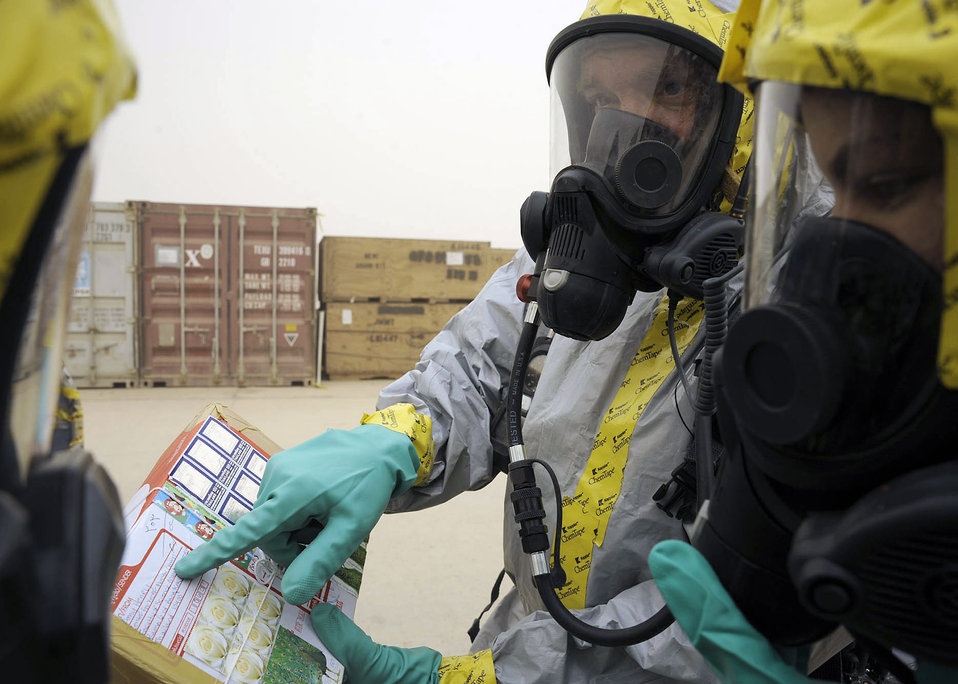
Inspecting the mail

Tech. Sgt. Steve Gaunt points out unique writing on a package to Senior Airman Tyrone Fisher (left) and Senior Airman Lacye Branch (right) during a postal inspection recently at Camp Stryker, Iraq. Airman Fisher is deployed from the Indiana Air National Guard's 181st Intelligence Wing. Airman Branch is deployed from Nellis Air Force Base, Nev., and Sergeant Gaunt is deployed from Alabama Air National Guard's 117th Air Refueling Wing.